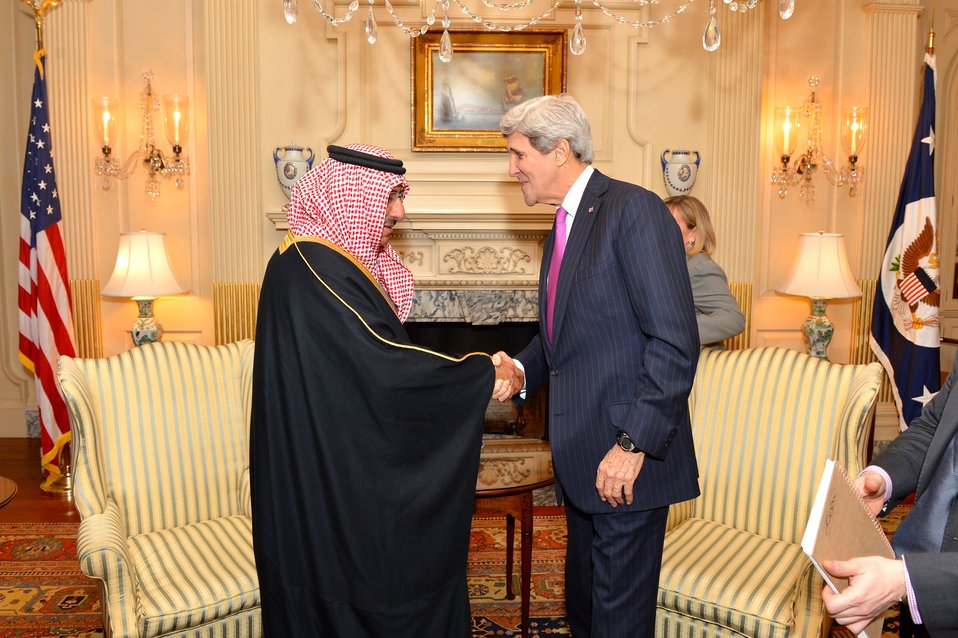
Secretary Kerry Shakes Hands With Saudi Interior Foreign Minister Mohammed bin Nayef

U.S. Secretary of State John Kerry shakes hands with Saudi Interior Foreign Minister Mohammed bin Nayef before their bilateral meeting at the U.S. Department of State in Washington, D.C., on February 11, 2014.